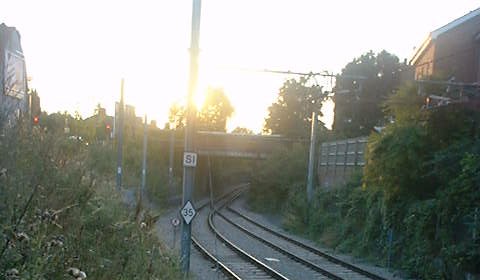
028139 tramlink mitcham